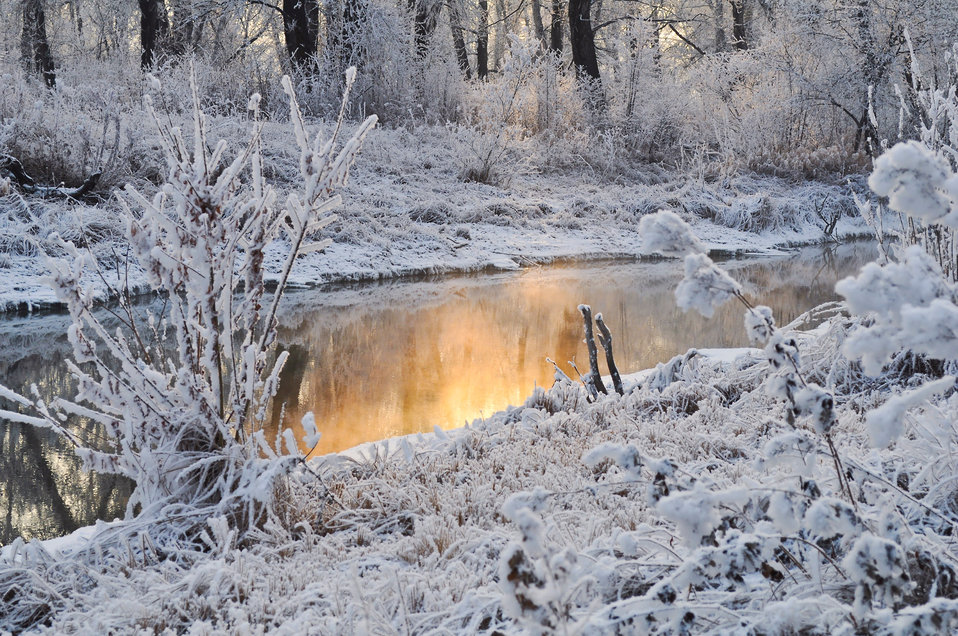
Sunset in winter

Whole river is not frozen.